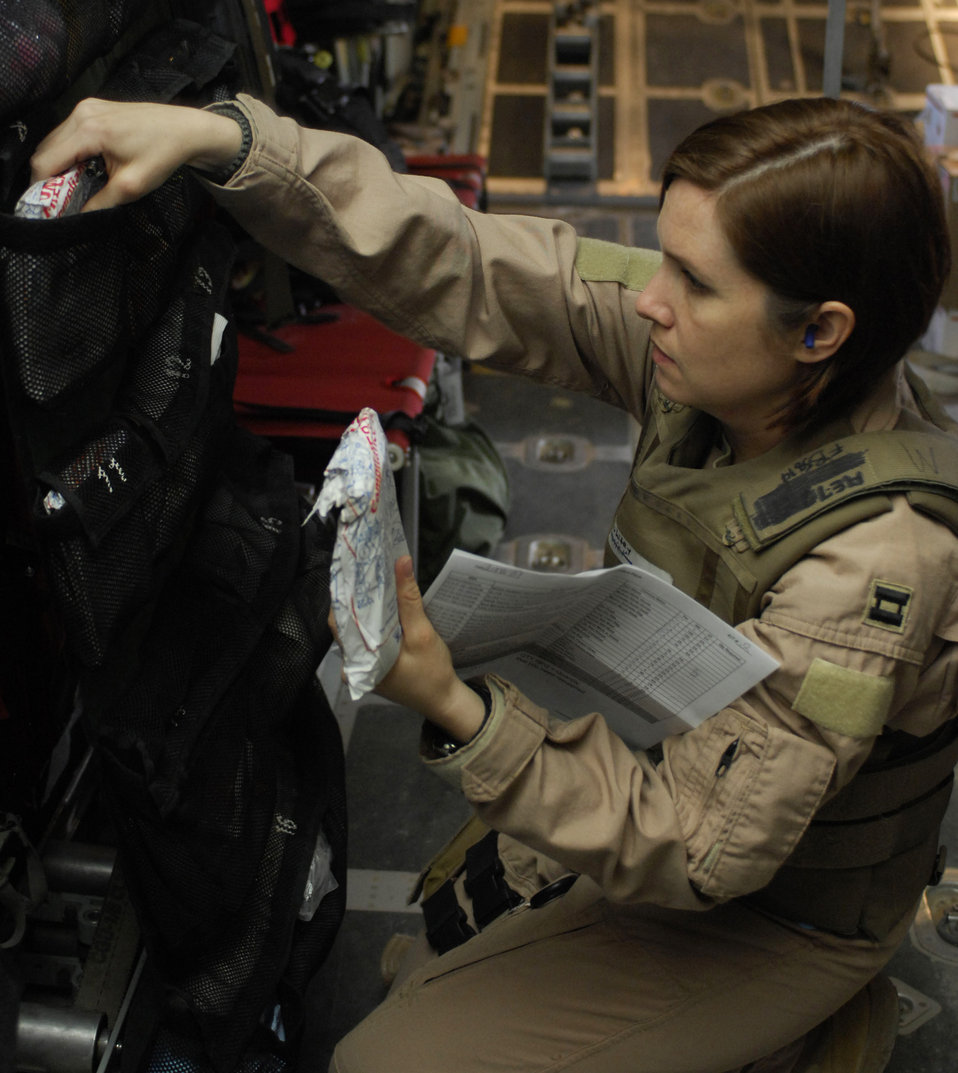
Flight nurse provides care in the air

Capt. Susan McCormick inventories her equipment March 26 during a flight to Manas Air Base, Kyrgyzstan, to pick up a patient. She prepares for each flight depending on the report given to her by the ground medical team. Captain McCormick is a flight nurse with the 455th Expeditionary Aeromedical Evacuation Flight at Bagram Airfield, Afghanistan, and is deployed from Westover Air Reserve Base, Mass.